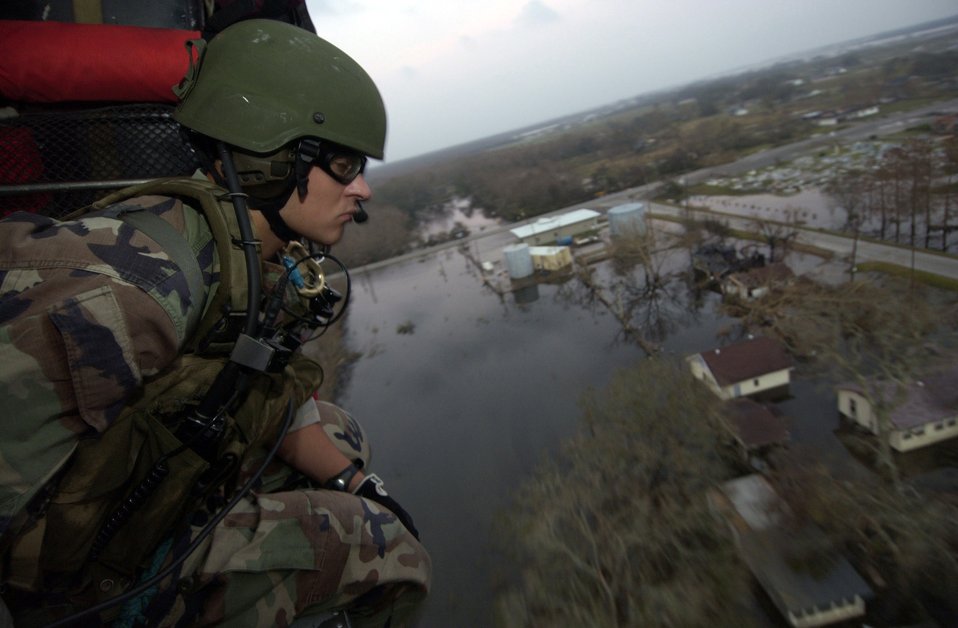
Search and rescue

RANDOLPH AIR FORCE BASE, Texas -- Senior Airman Arthur Zingler, an HH-60 Pave Hawk pararescueman, searches for Hurricane Rita victims during night operations over southern Louisiana. The Airman deployed here with the 38th Rescue Squadron from Moody Air Force Base, Ga. The unit has been doing search and rescue missions over the Rita affected are since arriving Sept. 24.